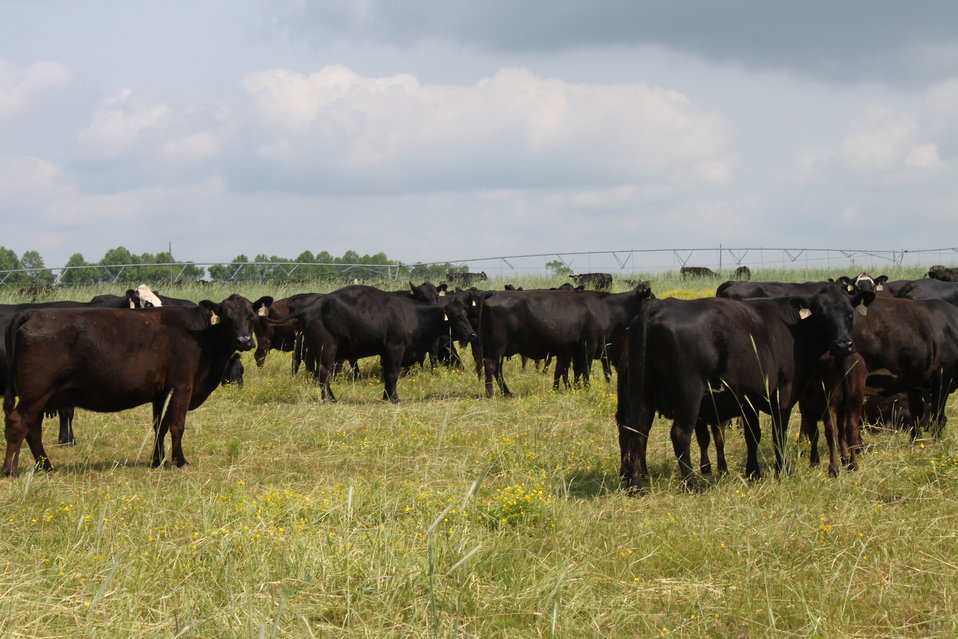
cwvDm9asA3Lw9bM2Abl5etGTAg

Cattle graze on the 275-acre Kilpatrick farm in Duplin County, NC on May 1, 2012. The U.S. Department of Agriculture’s (USDA) Natural Resources Conservation Service (NRCS) has worked with the Kilpatrick’s’ to install an irrigation system that sprays water from the 40,000-cubic-foot hog waste lagoon onto a 150-acre coastal Bermuda grass field, protect the stream on their property by planting buffers around it and fencing it to keep cattle out of it, improve grazing by installing cattle watering facilities, implementing rotational grazing and diversifying the forages they grow, and make waste disposal easier by installing a composting facility to dispose of dead hogs.